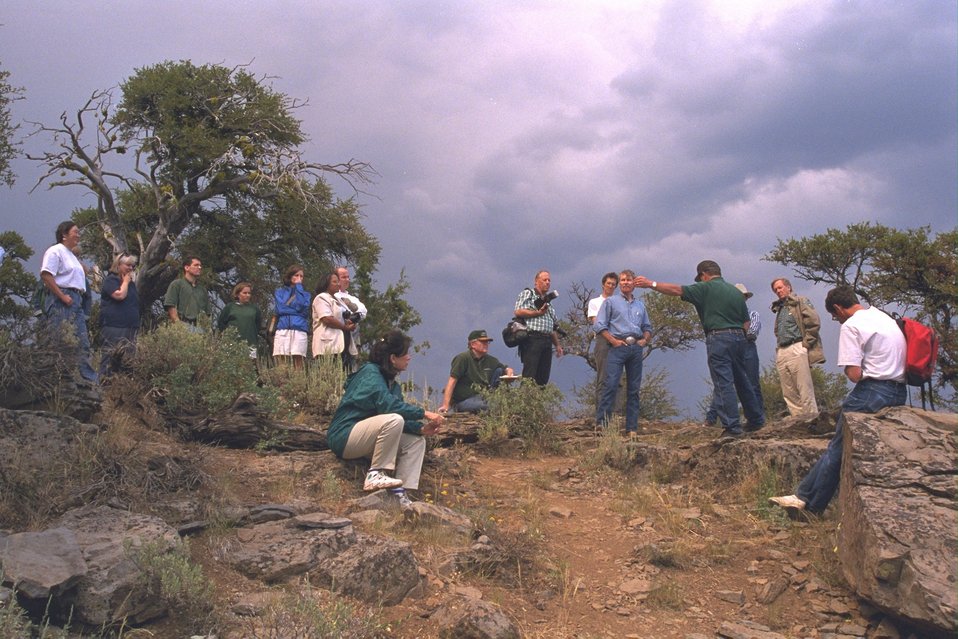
Secretary Babbitt/Governor Kitzhaber delegation addressing designation of Steens Mountain at Big Indian overlook.